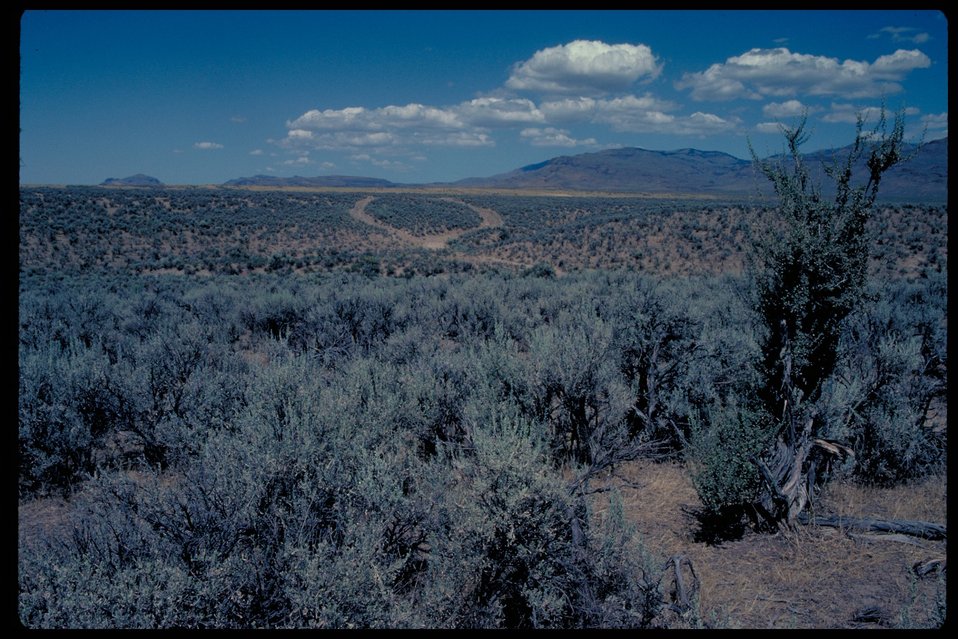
Oregon Trail Kelton Road east of Cold Springs Creek Lower Snake River District